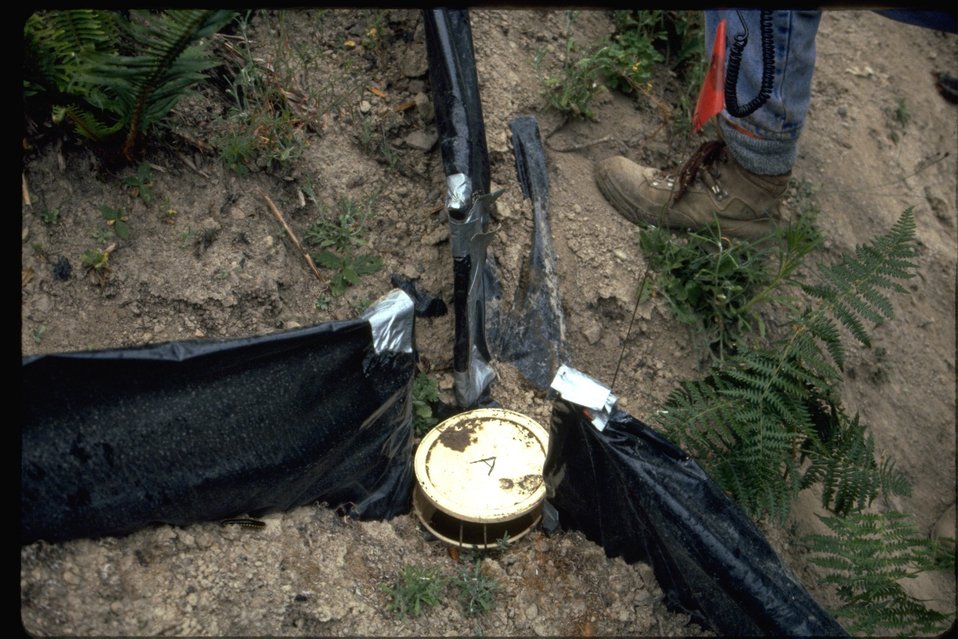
Amphibian trap in clear cut.